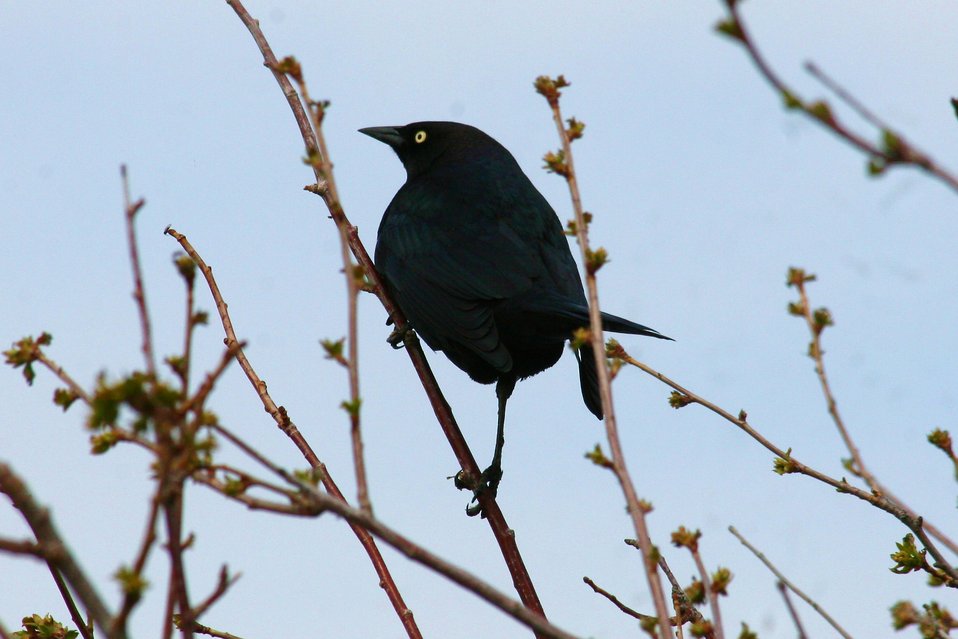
A Brewer's Blackbird Perched in a Woody Bush

The lands of the refuge were established to protect and provide habitat for migratory birds that cross State lines and international borders and are by law a Federal trust responsibility.

The refuge is of great value to waterfowl and shorebirds, as well as other migrating water-dependent bird species, because of the diversity of wetland and upland habitats that provide for the diverse life cycle needs of these species.